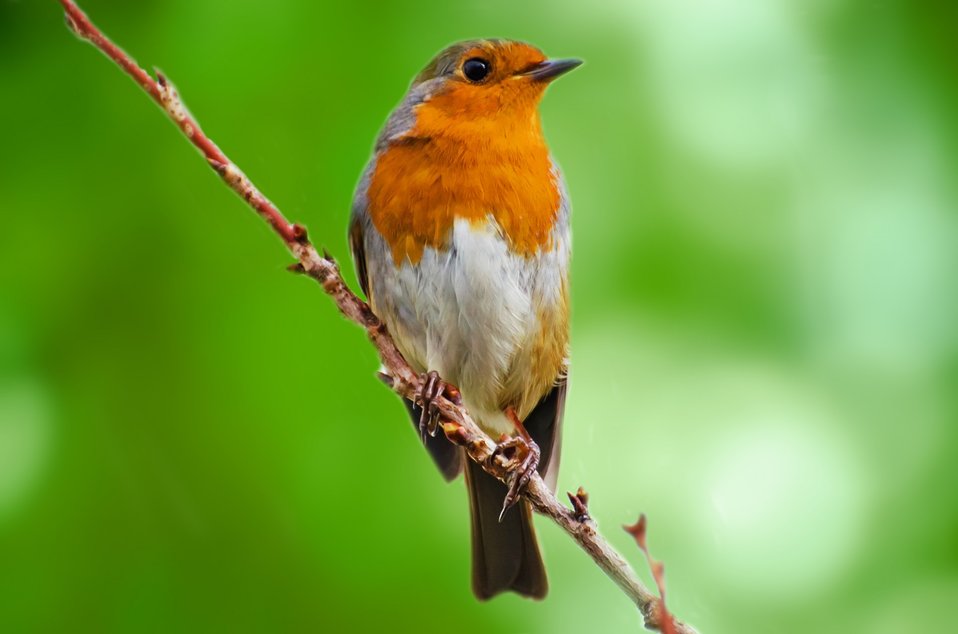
Bird - robin.